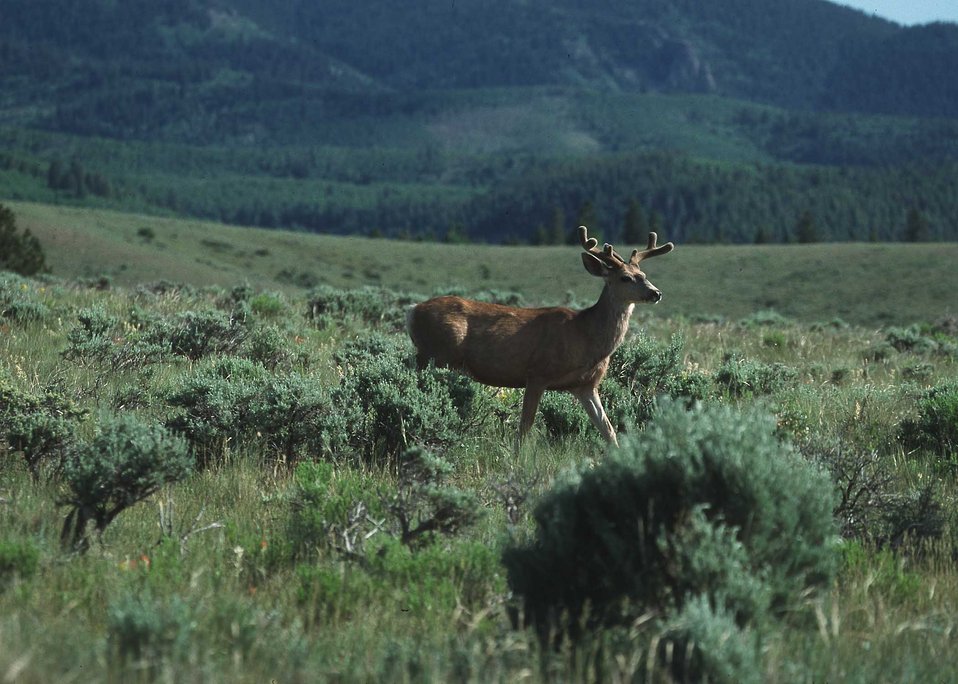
Mule Deer in velvet on FT Ranch.